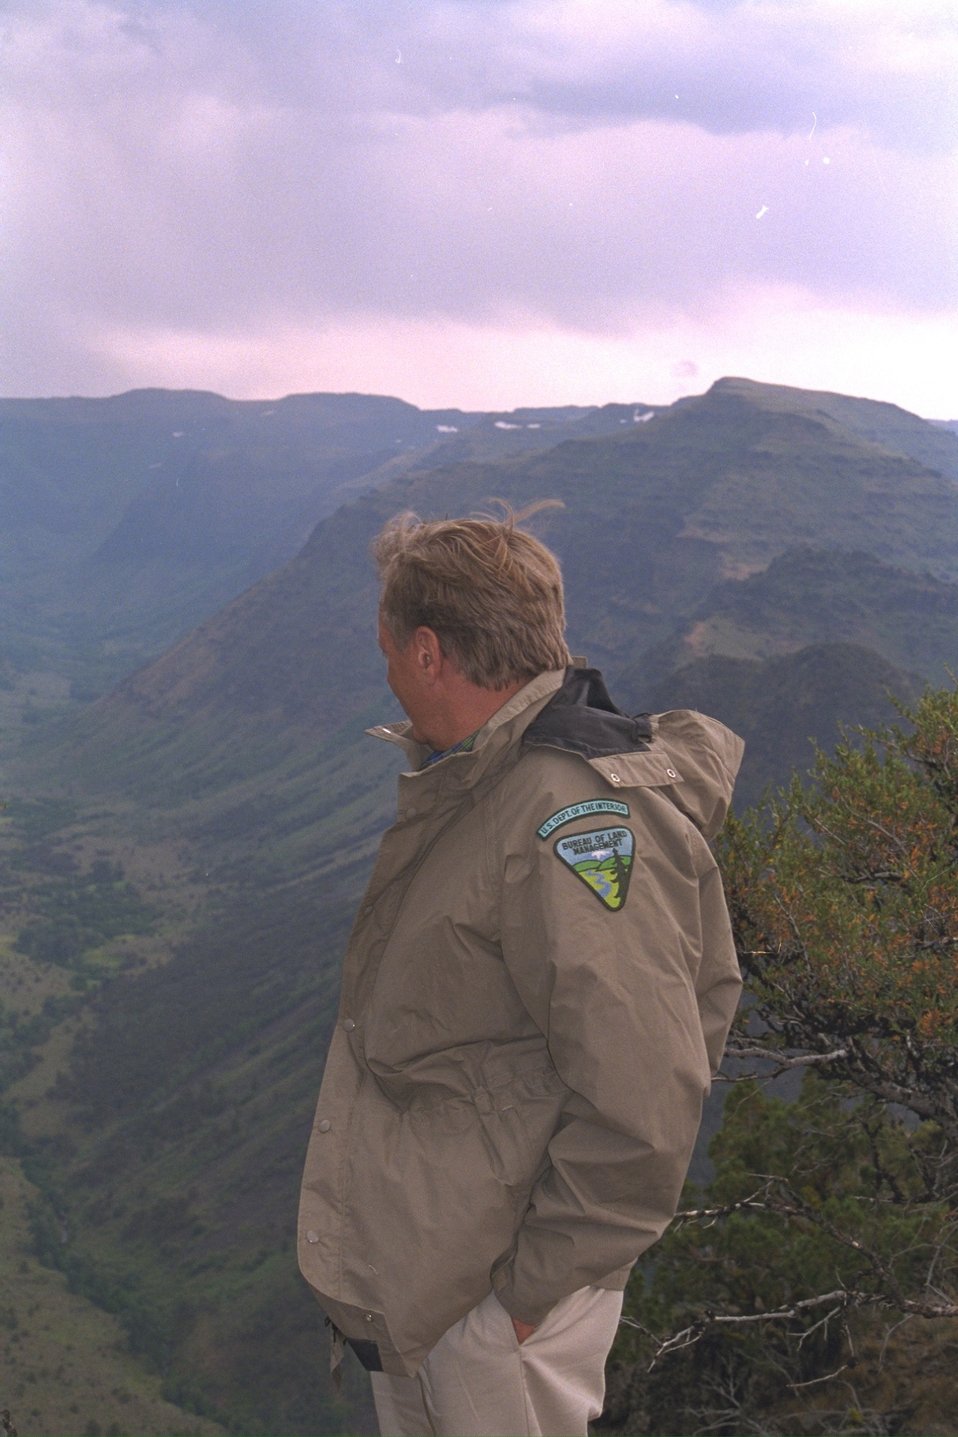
Secretary of the Interior, Bruce Babbitt, at Big Indian Gorge on Steens Mountain.